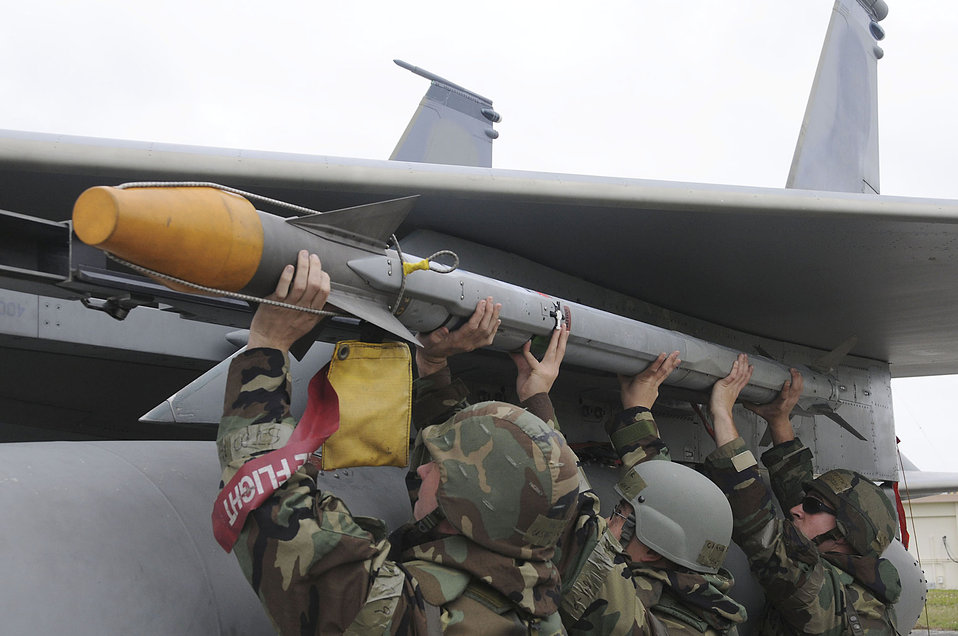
Firepower

Airmen from the 44th Aircraft Maintenance Unit connect an AIM-9X Sidewinder missile to an F-15 Eagle March 1, 2011, during an operational readiness exercise at Kadena Air Base, Japan.